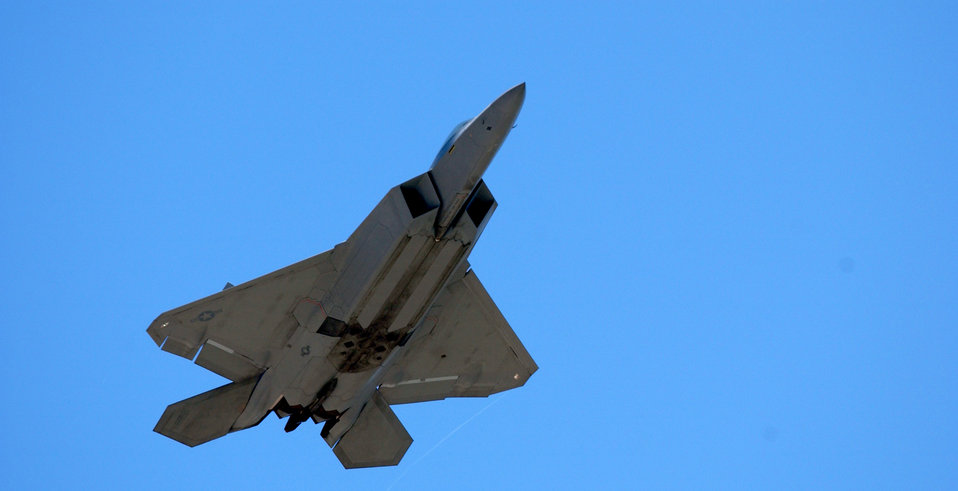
Pass in review

U.S. AIR FORCE ACADEMY, Colo. -- An F/A-22 Raptor flies over the graduation parade here June 1. It was flown by Lt. Col. Dawn Dunlop, a graduate of the academy's Class of 1988. She is now a test pilot and squadron operations officer at Edwards Air Force Base, Calif., with nearly 100 hours of flying time in the Raptor.